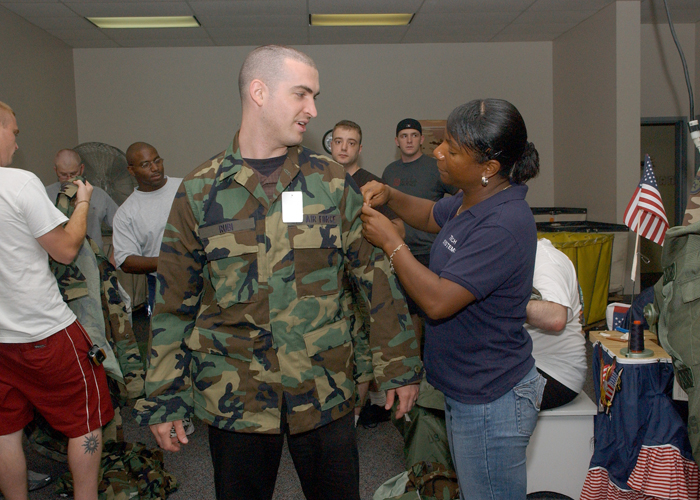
IRR tests operational capability with Push-Pull exercise

Capt. Darren Rubi gets his uniform quality checked by Karen Walker at clothing issue as